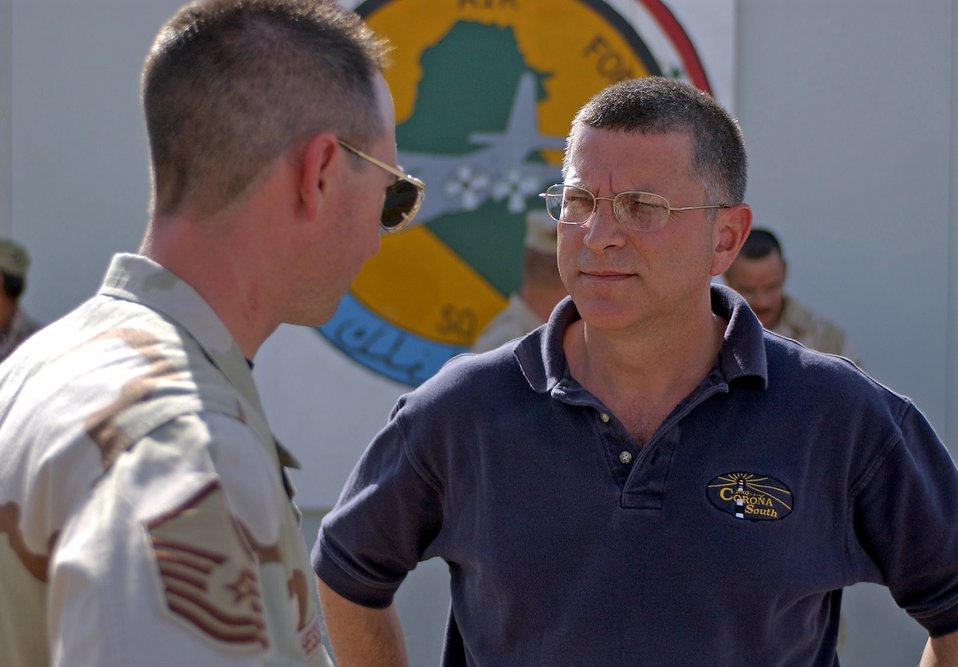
Dominguez talks about present course in Iraq, future for Airmen

TALLIL AIR BASE, Iraq -- Michael L. Dominguez, acting secretary of the Air Force, speaks with Master Sgt. Lloyd Hesseltine during a visit here June 29. Mr. Dominguez told Airmen the importance of the U.S. military's mission in Iraq and what the future image of an Air Force warfighter will look like. Sergeant Hesseltine is assigned to the 777th Expeditionary Aircraft Maintenance Squadron.